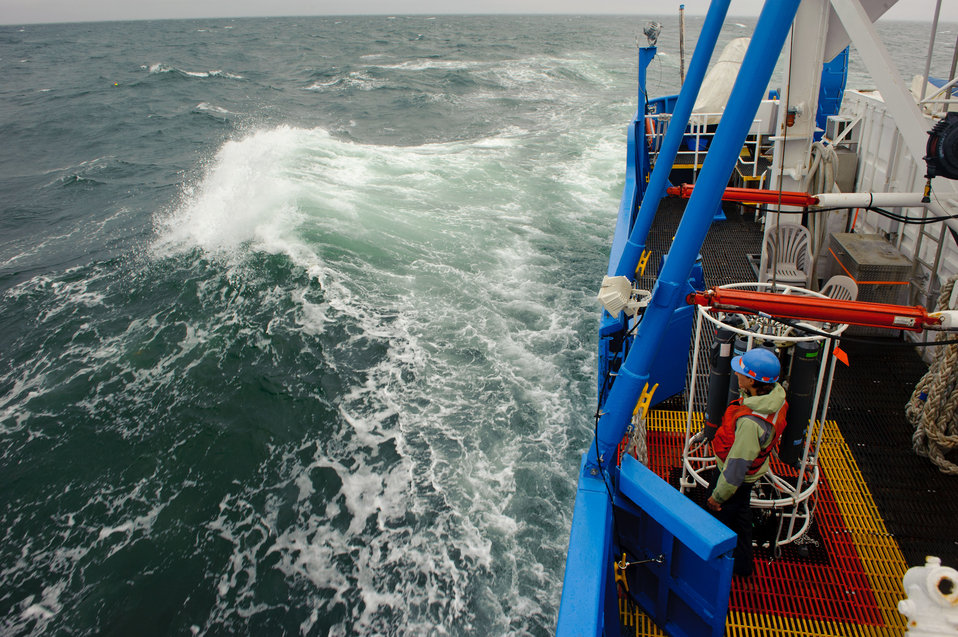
August 7, 2011 Watching as we head into rougher seas off Cape Porpoise, Maine